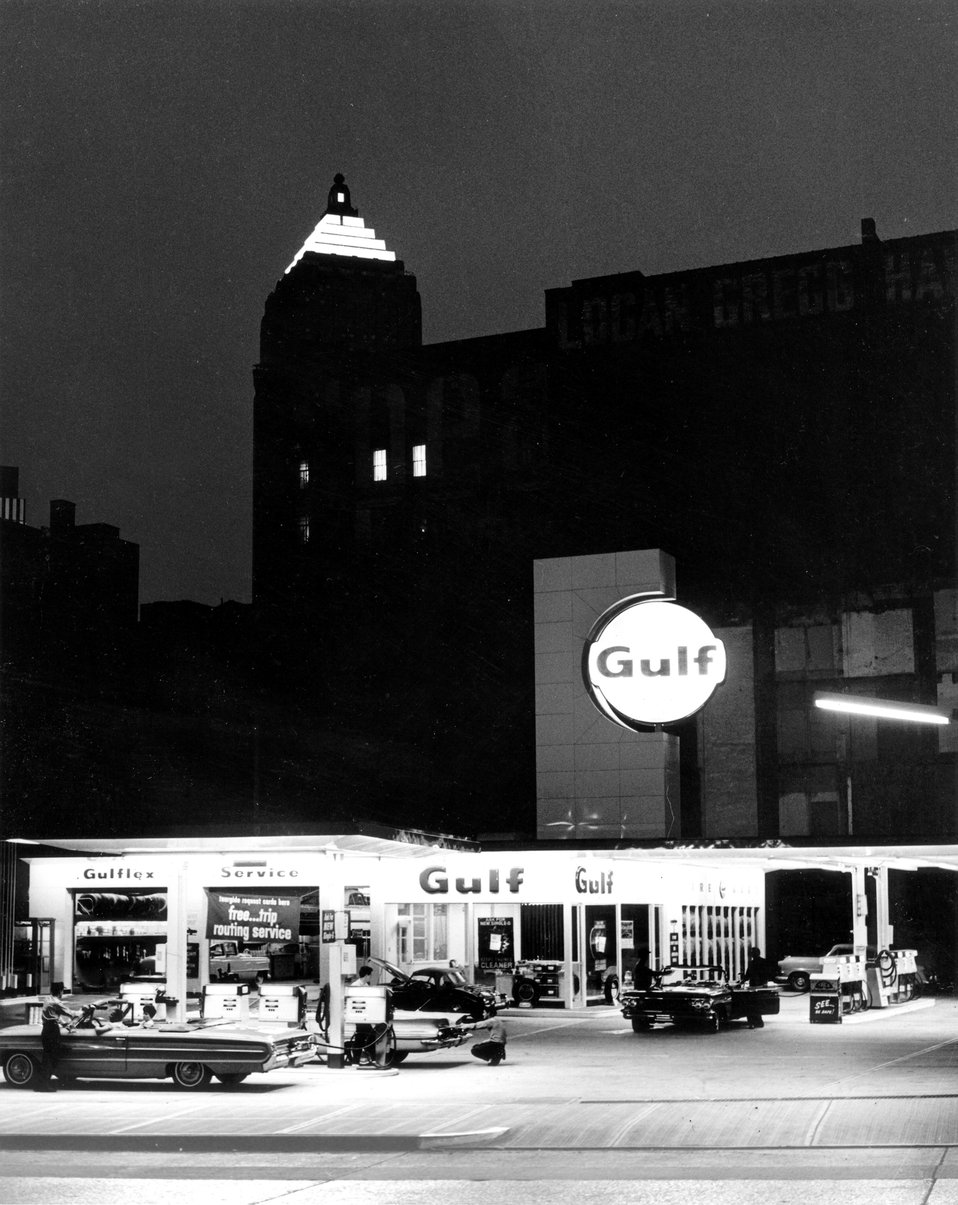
Service center at night. c. 1960s